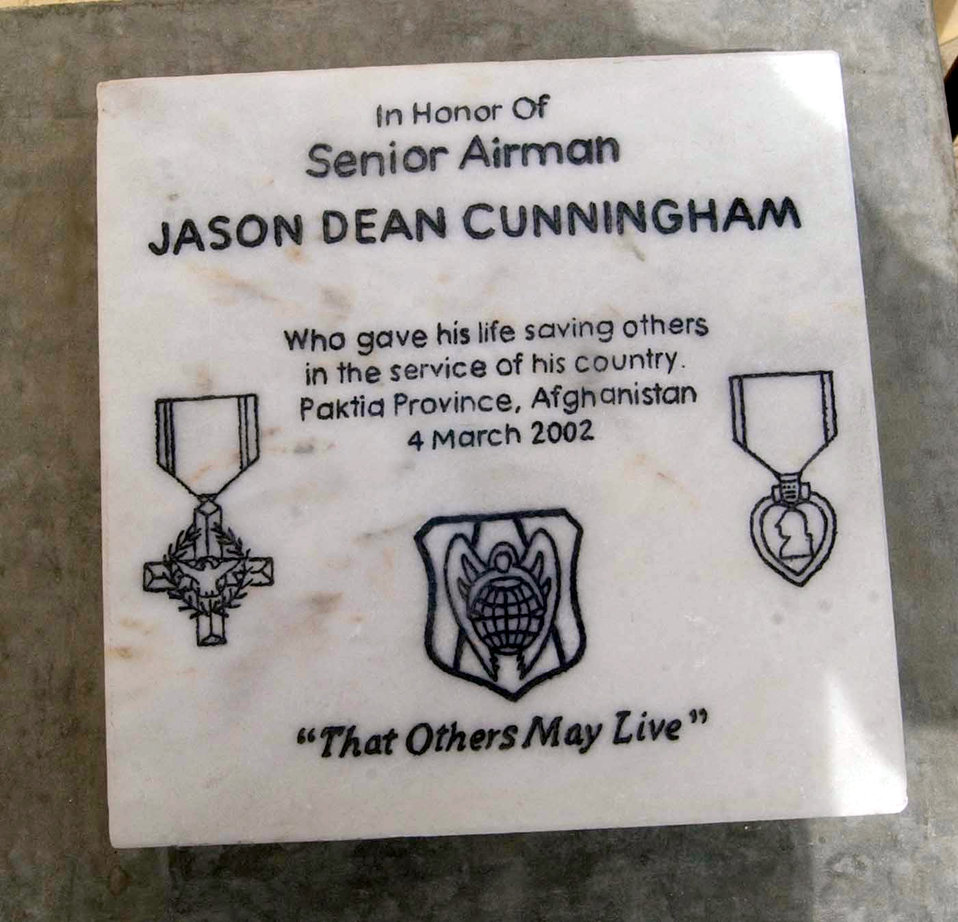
Paying tribute

BAGRAM AIR BASE, Afghanistan -- A marble monument was unveiled during a dedication here that officially named the Air Force compound to Camp Cunningham, in memory of Senior Airman Jason D. Cunningham. Airman Cunningham was a pararescueman killed in action during Operation Enduring Freedom. The monument was made by Capt. Matt Duston, Master Sgt. James Wilson and Airman 1st Class Justin Cyr, all civil engineers with the 455th Expeditionary Operations Group.